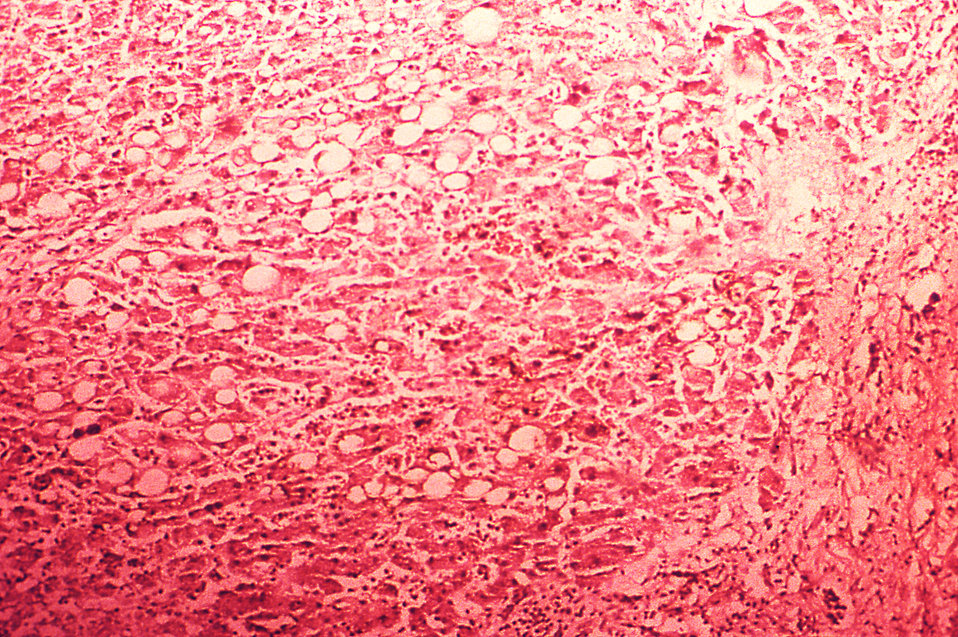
Under a high magnification of 250X, this hematoxylin-eosin-stained (H&E) photomicrograph depicts the cytoarchitectural changes found in a liver tissue specimen extracted from a malnourished individual with alcoholic liver disease. This particular slide reveals 'microvacuolar steatosis, i.e., fatty degeneration, with a focal distribution.'